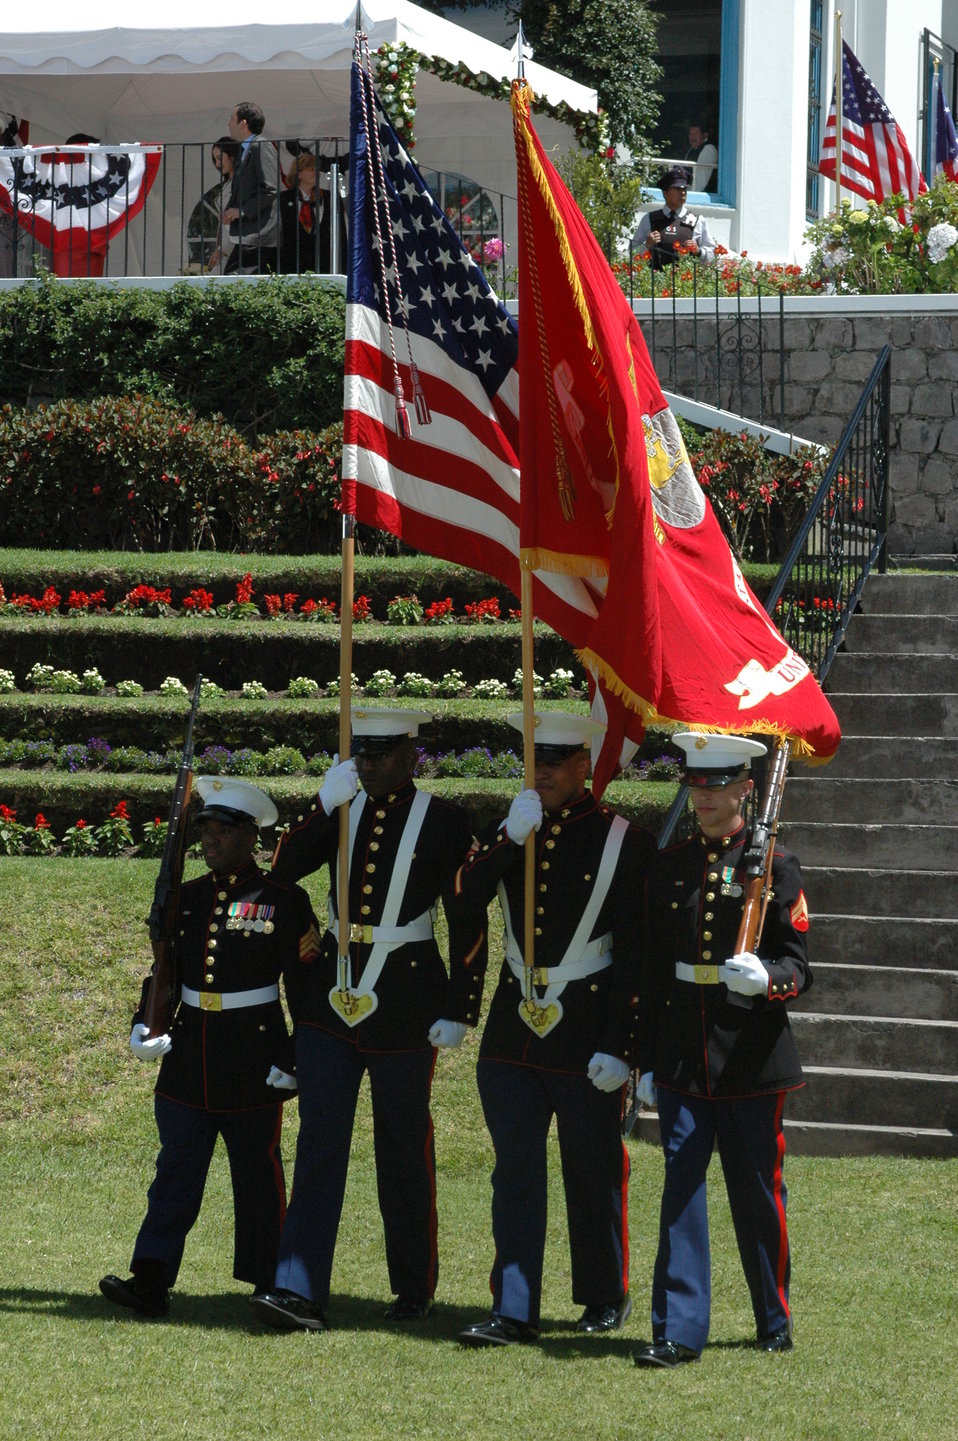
July 4th Celebration at U.S. Embassy in Ecuador

The U.S. Marine Corps Guard presents the colors at the U.S. Independence Day celebration in Quito, Ecuador, on July 2, 2010.